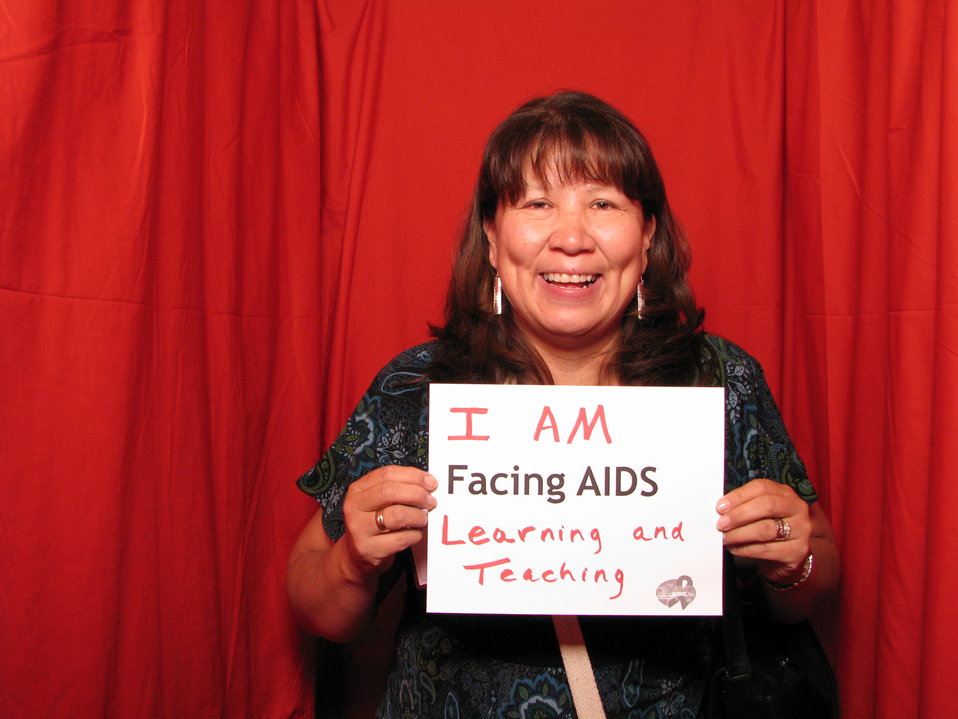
I AM FACING AIDS Learning and Teaching.

From the AIDS.gov photo booth at the U.S. Conference on AIDS, September 2010 (Orlando, FL).